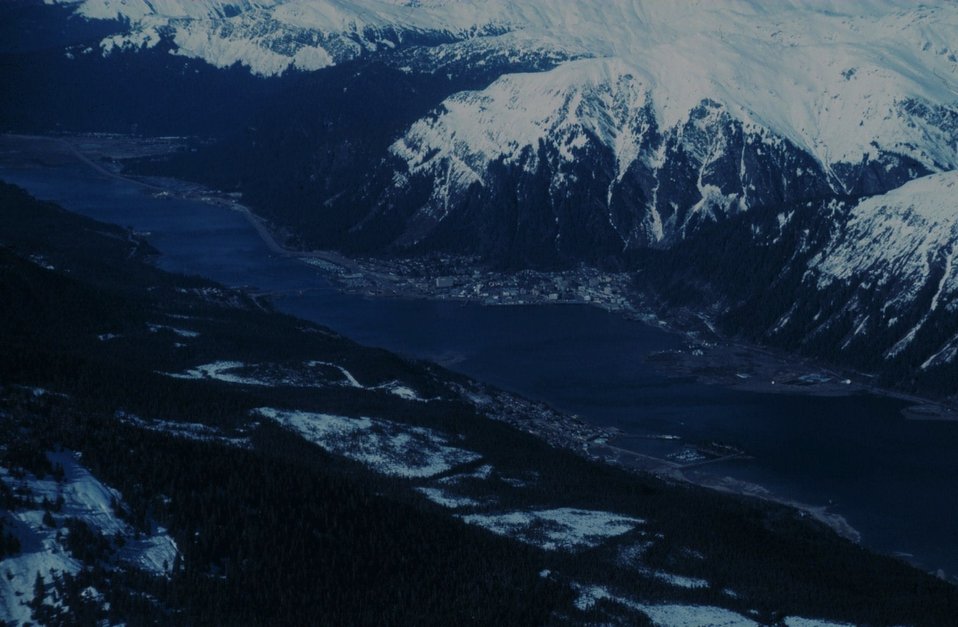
Gastineau Channel looking east at Juneau